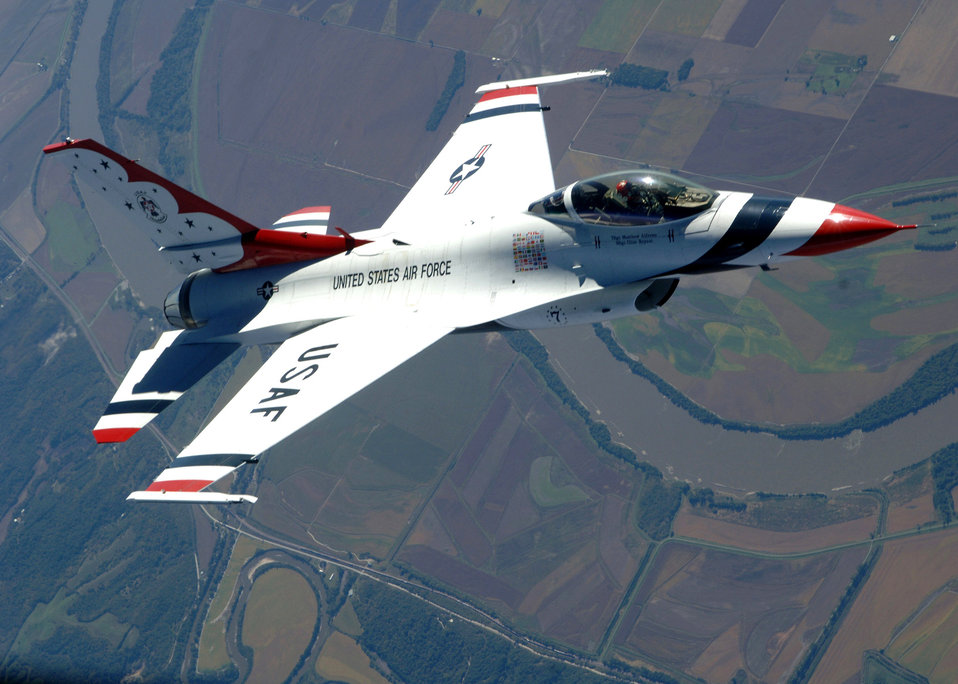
Refueling Thunderbirds

An Air Force Thunderbird flies over the Midwestern United States during an air refueling mission Oct. 1. The Thunderbirds are the Air Force's premier demonstration squadron. The F-16 Fighting Falcon team represents the Air Force throughout the nation and abroad.